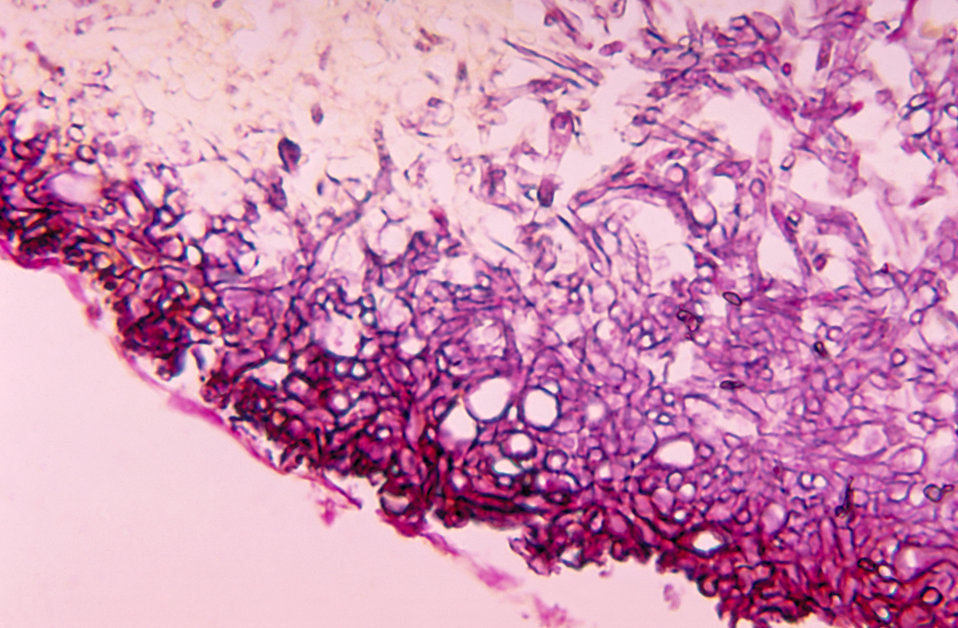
This slide depicts the histopathologic changes seen in 'black grain' mycetoma due to Madurella grisea.